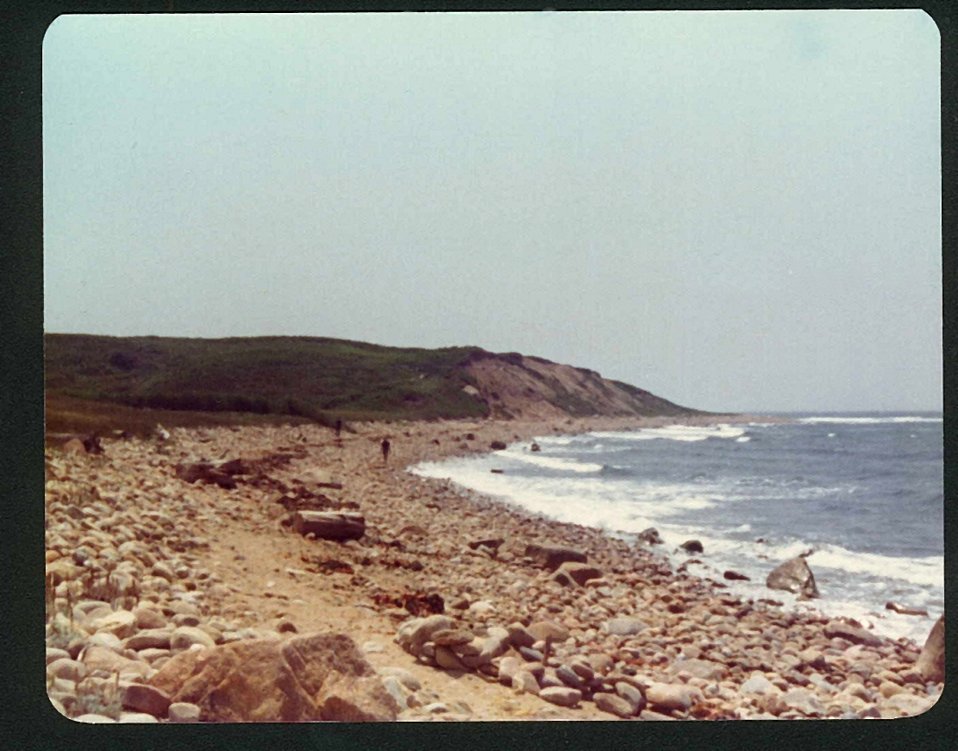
The cobble beach and cliffs on the Atlantic side of Block Island.